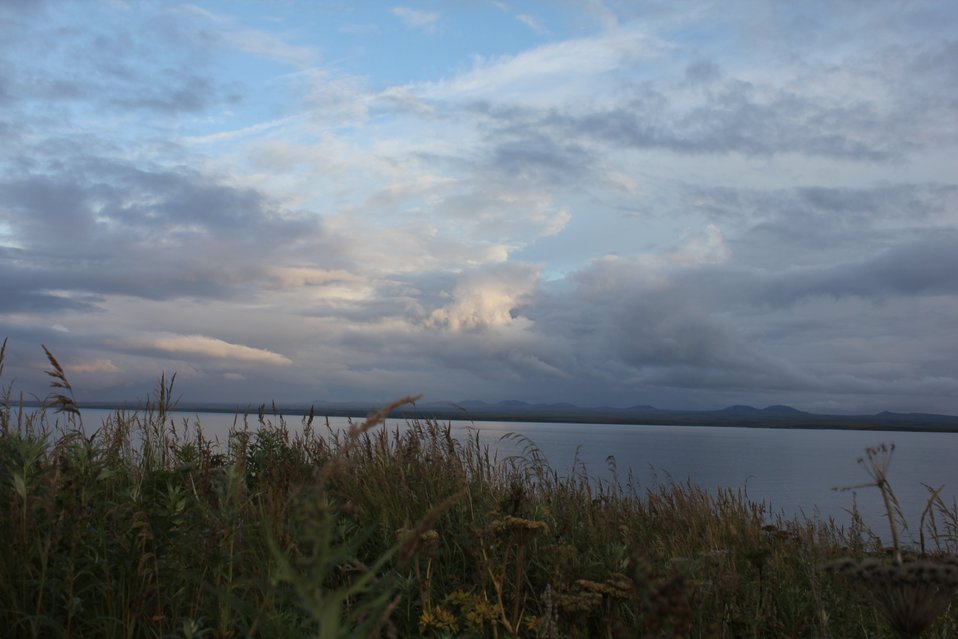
Looking across to the mainland at dusk.